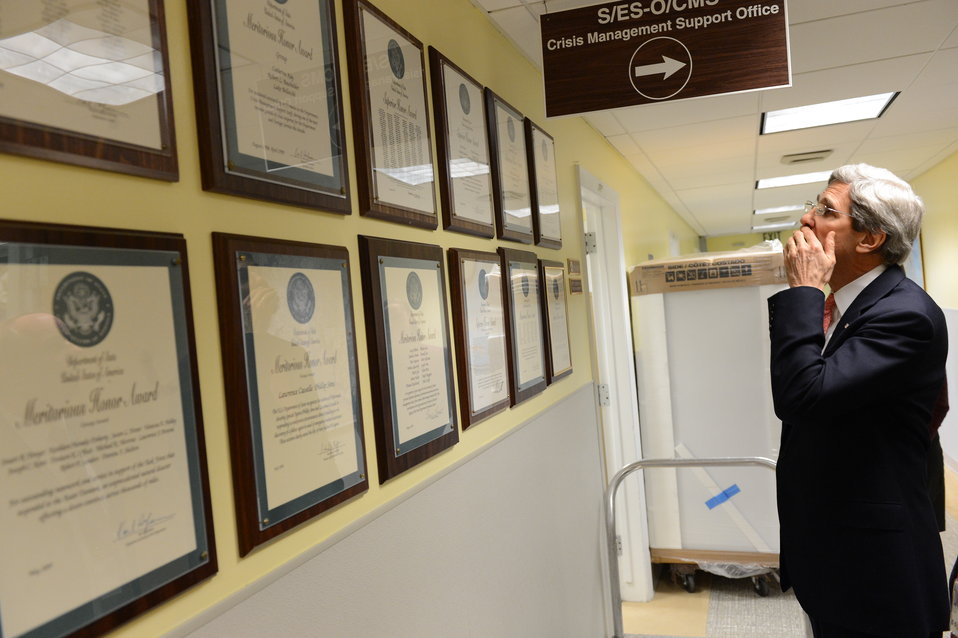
Secretary Kerry Reads Award Citations

U.S. Secretary of State John Kerry reads award citations hanging in the Executive Secretariat offices in the U.S. Department of State, Washington D.C., February 4, 2013.